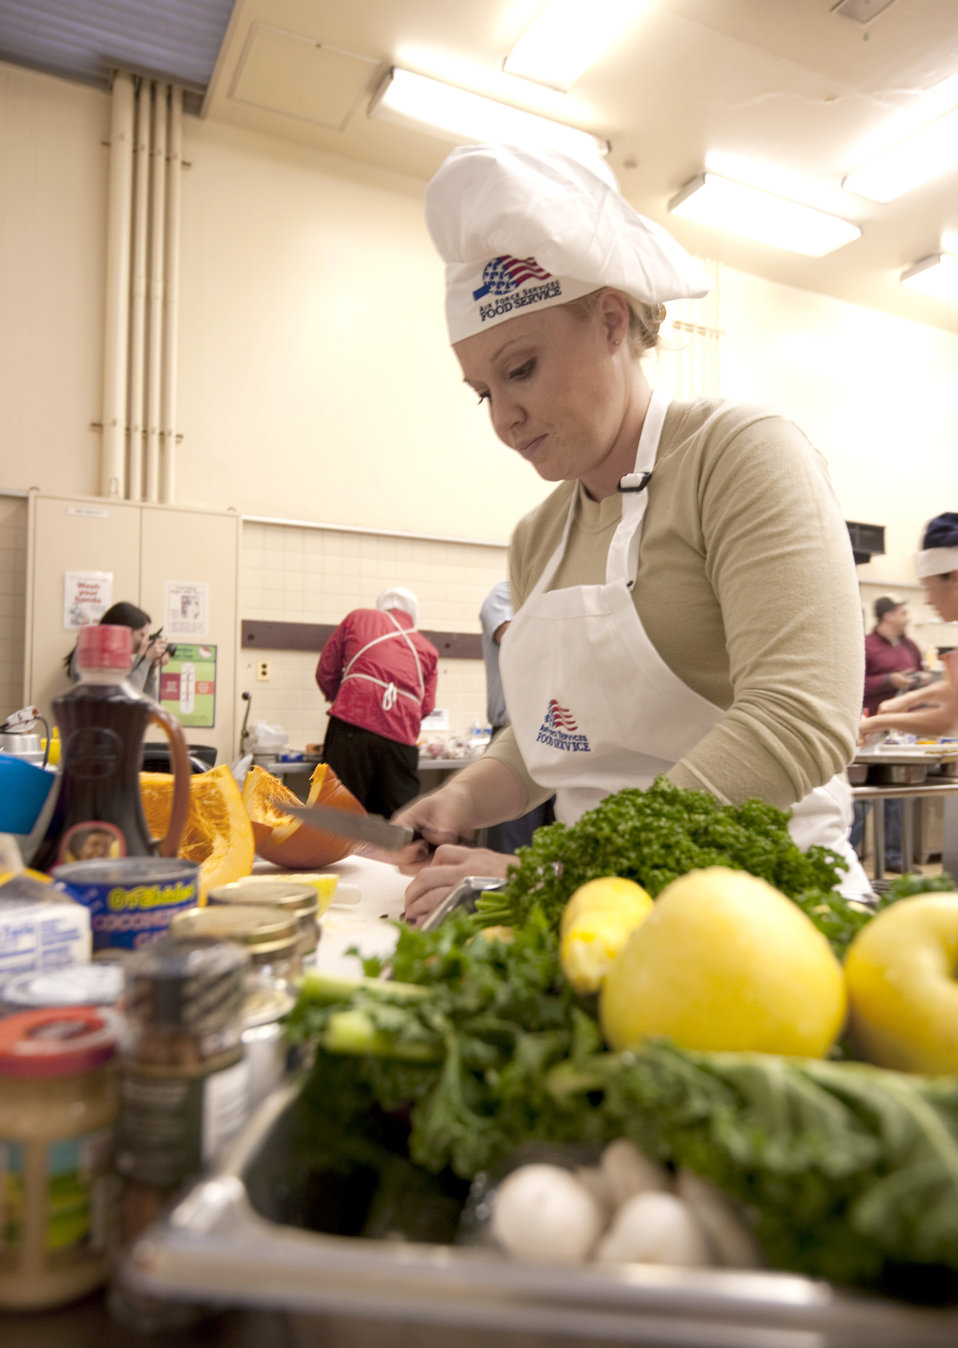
Iron Chefs

Staff Sgt. Sarah Marlow dices pumpkin and vegetables for the second annual